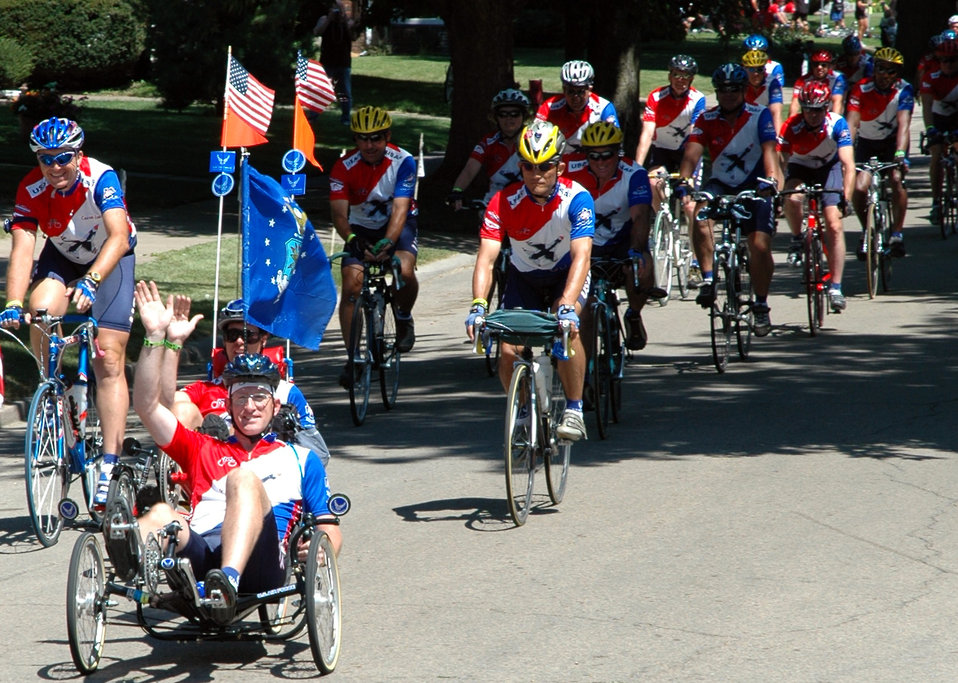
Ride Across Iowa

CLINTON, Iowa -- Tech. Sgt. Brad Whitmill of Offutt Air Force Base, Neb., and Tech. Sgt. Joel Weatherhead of Kunsan Air Base, Korea, wave to bystanders here at the end of the 32nd Des Moines Register's Great Bicycle Ride Across Iowa. The cyclists were among the more than 100 members of Team Air Force and almost 10,000 other riders in the weeklong, 490-mile ride across the state. Team Air Force rode into town at high noon July 31 in a two-column formation, a RAGBRAI tradition.